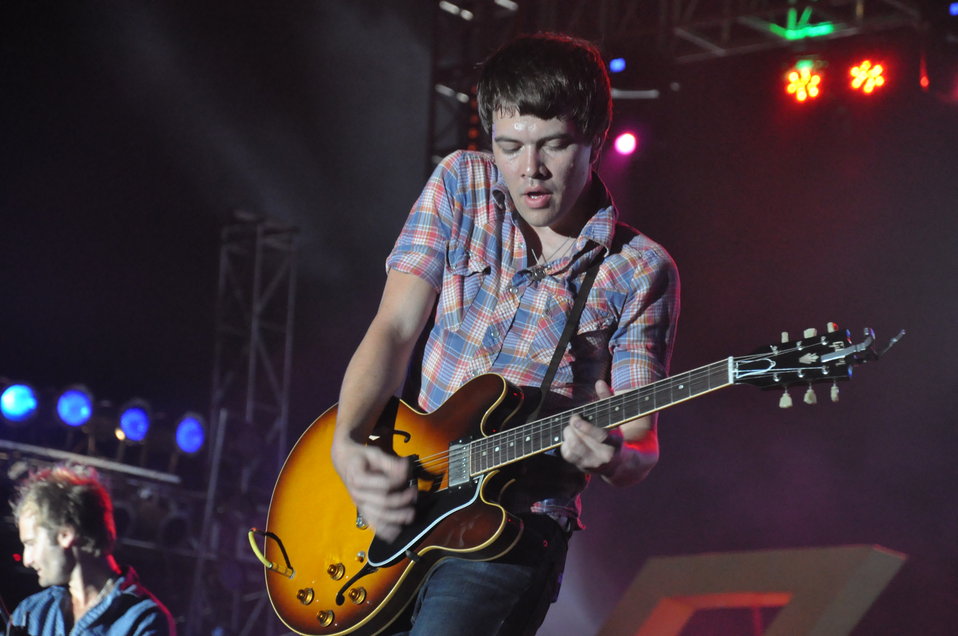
USAID MTV EXIT HCMC Concert

The Click Five performs a concert in Ho Chi Minh City against human trafficking, April 17, 2010